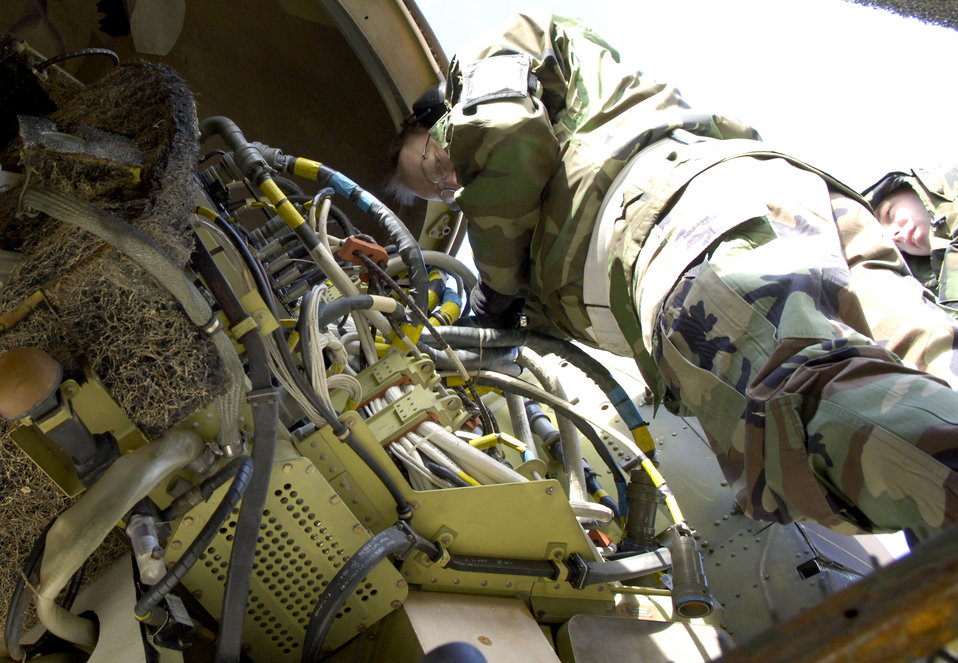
Stratofortress mission

BARKSDALE AIR FORCE BASE, La. (AFPN) -- Tech. Sgt. James Sykes and Airman 1st Class Joseph Norman perform maintenance on a B-52H Stratofortress Feb. 4. The Airmen are Reservists assigned to the 917th Aircraft Maintenance Squadron here.